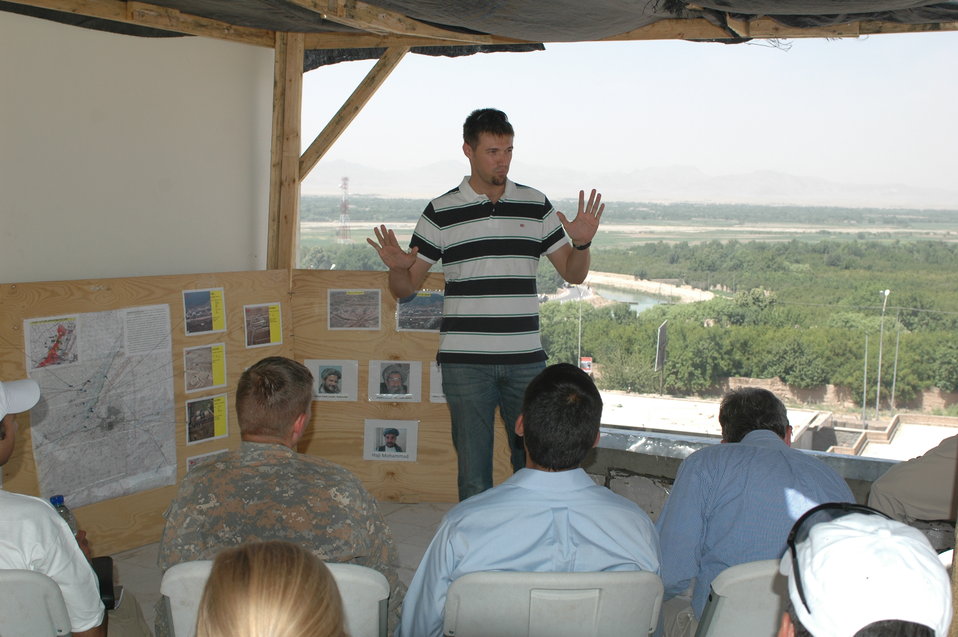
Dr Shah Visits Kandahar April 9, 2010